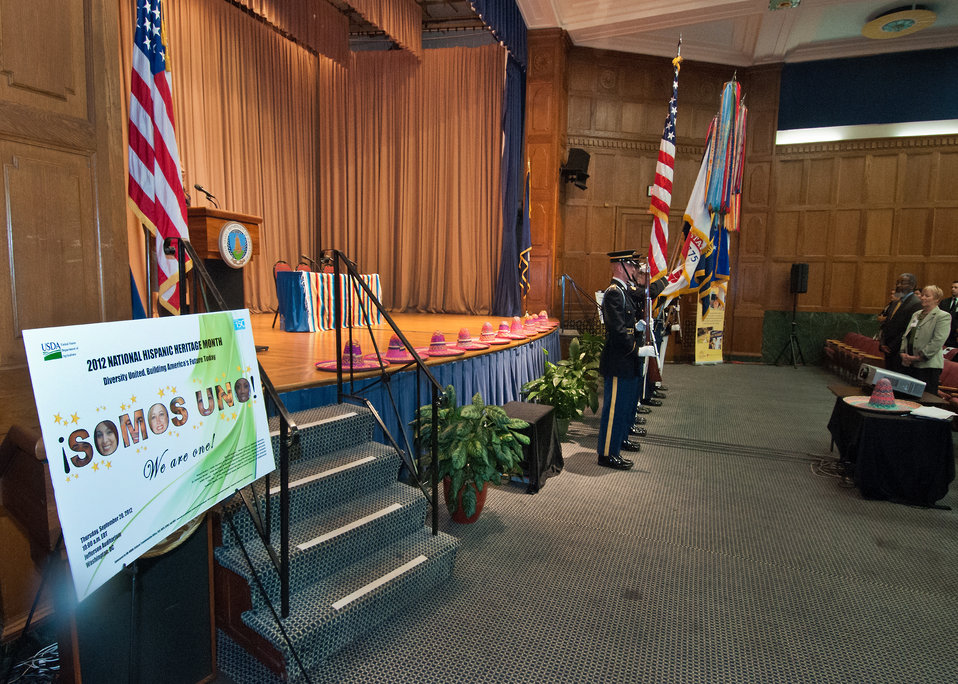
The U.S. Military District of Washington Joint Armed Forces Color Guard presents the Colors at the U.S. Department of Agriculture (USDA) 2012 Hispanic Heritage Month in Washington, D.C. on Thursday Sept. 20, 2012.